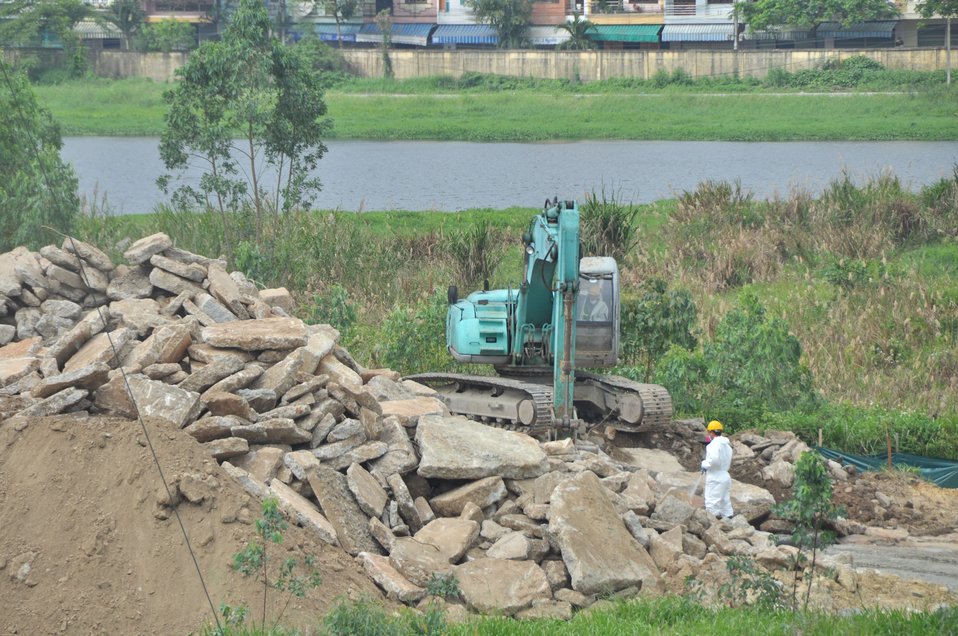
USAID Dioxin Contamination Project Progress

Progress at the Environmental Remediation of Dioxin Contamination Project at the Danang Airport

December 19, 2013